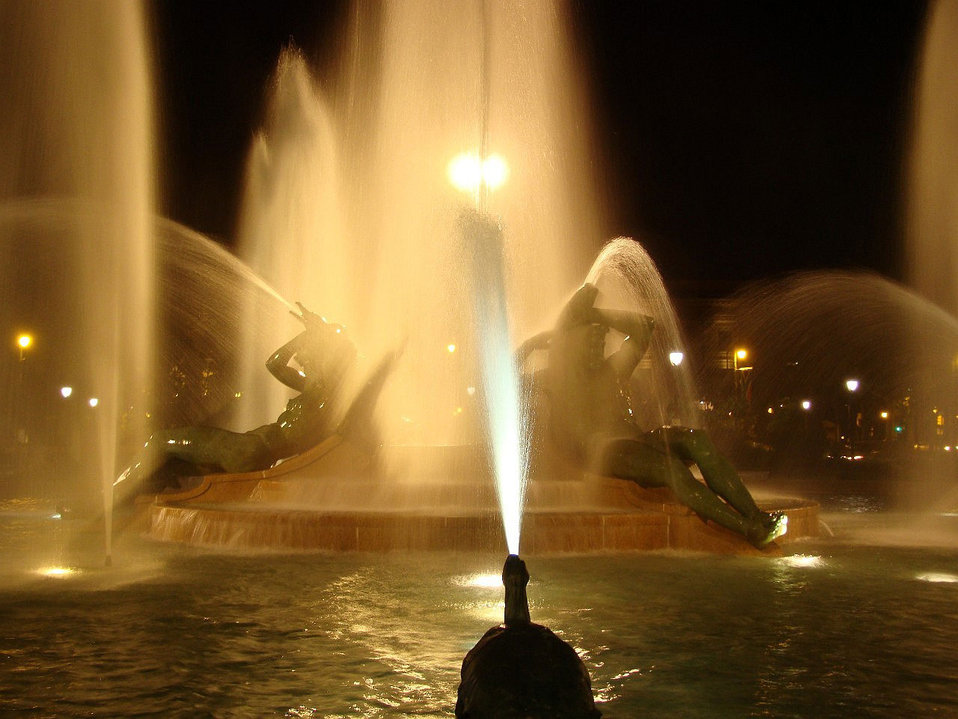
Fountain at night

Philadelphia swann fountain at night.